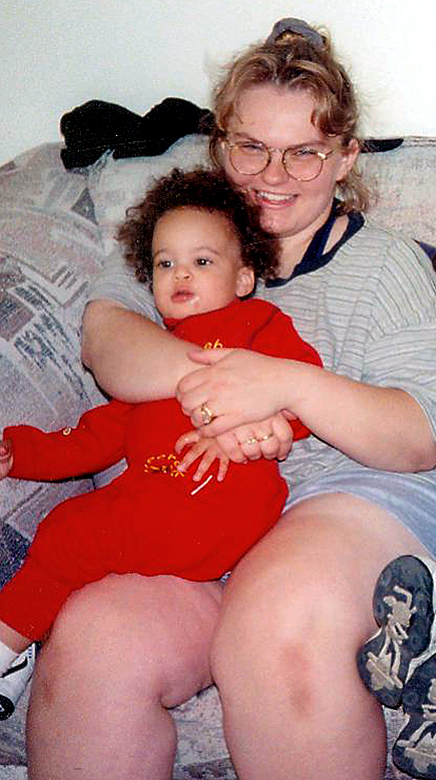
Fitness instructor loses nearly half of herself

SEYMOUR JOHNSON AIR FORCE BASE, N.C. -- Keyra Donaldson weighed 250 pounds in this 2000 photo. She now weighs in at 135.